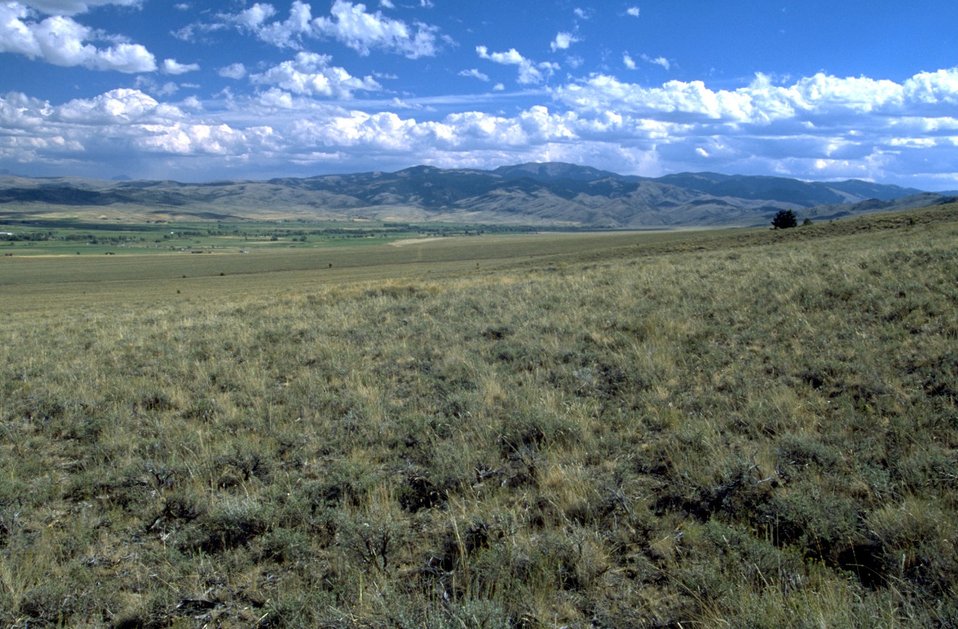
Sage grass hillside overlooking the valley bottom. Interesting cloud formations